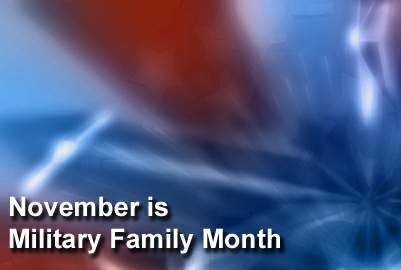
President proclaims November is Military Family Month

President Barack Obama pledged his support of military members and their families and said Americans have a